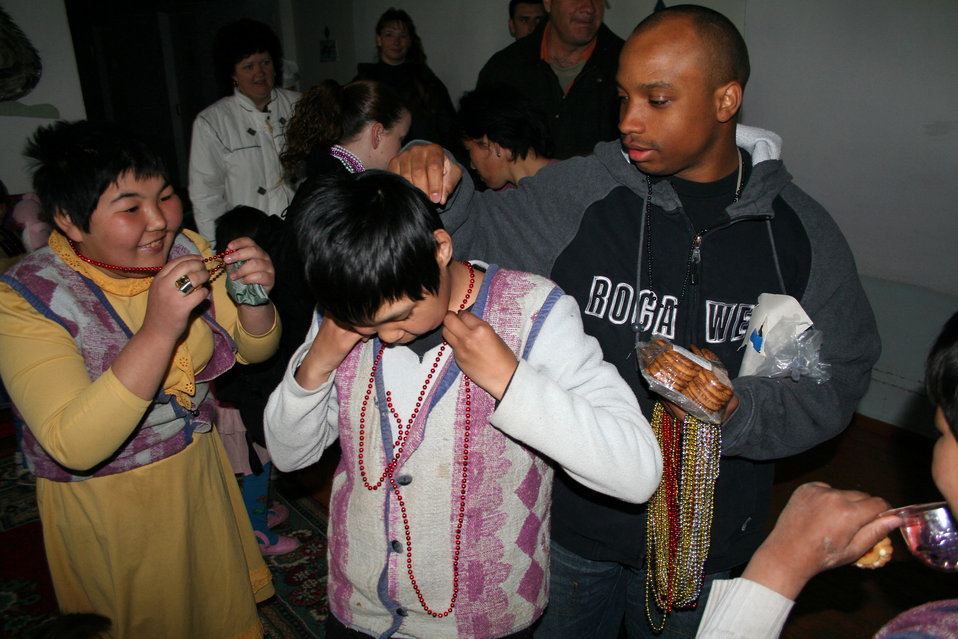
Orphanage favorite off-duty destination for Manas Airmen

Senior Airman Tramell Johnson distributes bead necklaces at the Belovodsky Orphanage for children with special needs. Every week, he volunteers his day off to bring Airmen from Manas Air Base to the orphanage in Belovodsky, Kyrgyzstan, where they distribute treats, play with the children, and donate time and material to make needed repairs to the facility.